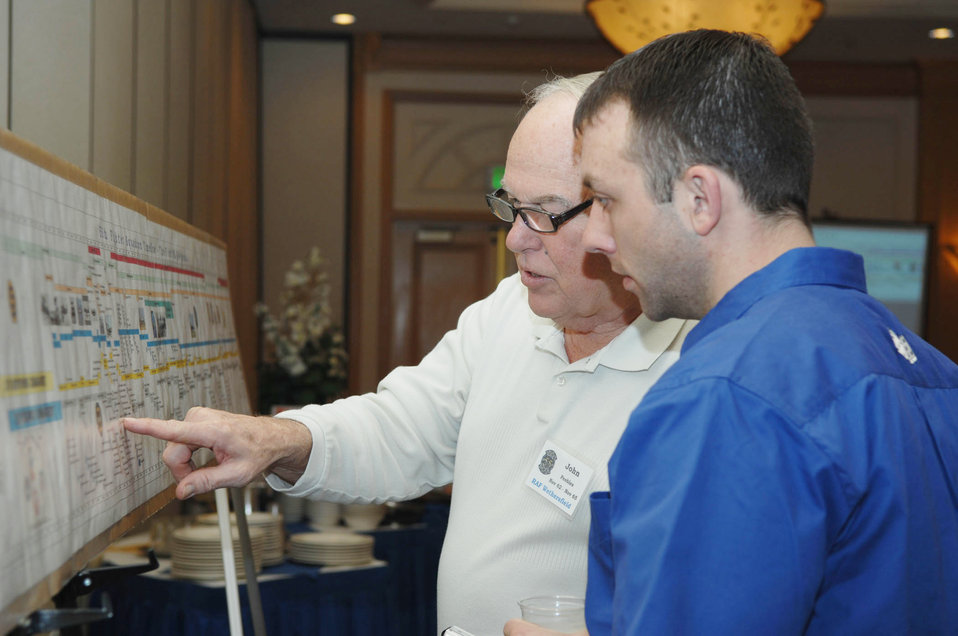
Past, present Shooters unite

Lt. Col. John Peebles discusses the 55th Fighter Squadron history with Capt. Brian Hoose at a reunion breakfast, March 6, 2010, in Las Vegas. Colonel Peebles is a 55th FS